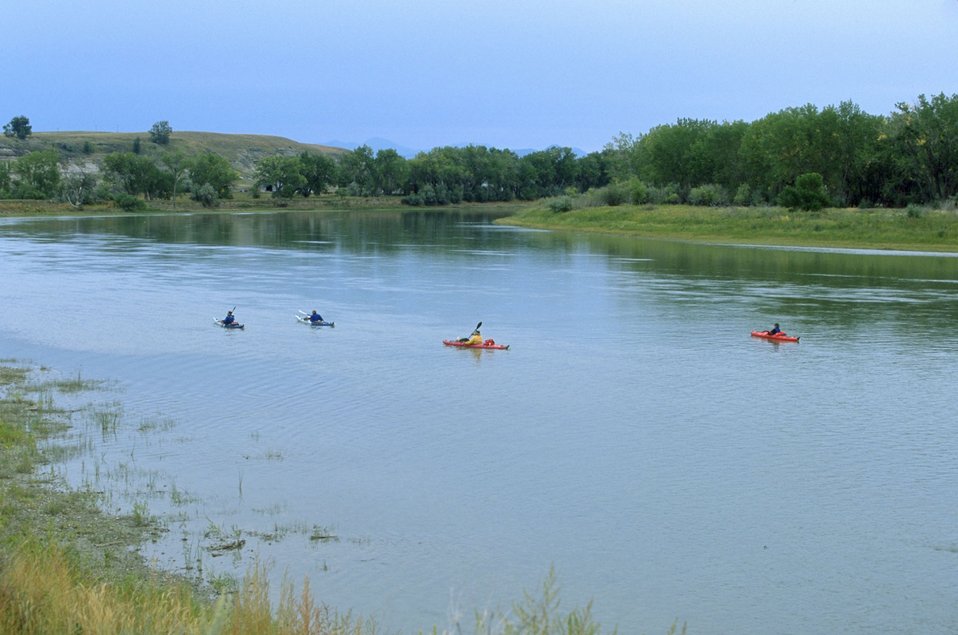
Floating the Upper Missouri River